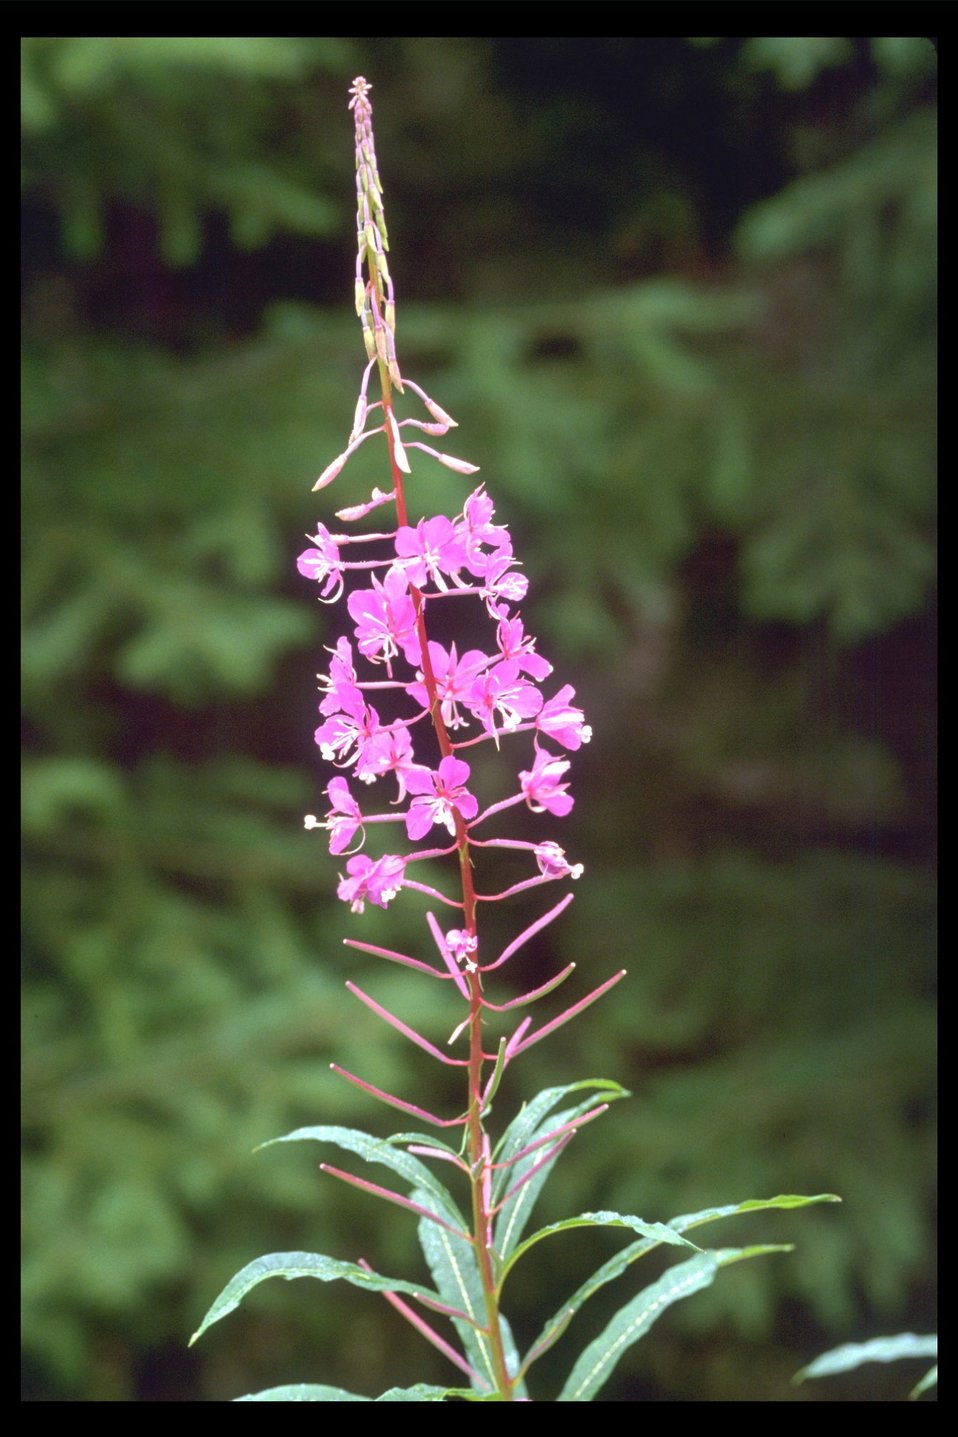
Close up of Red Fireweed (Epilobium angustifolium) at Upper Trail Creek.